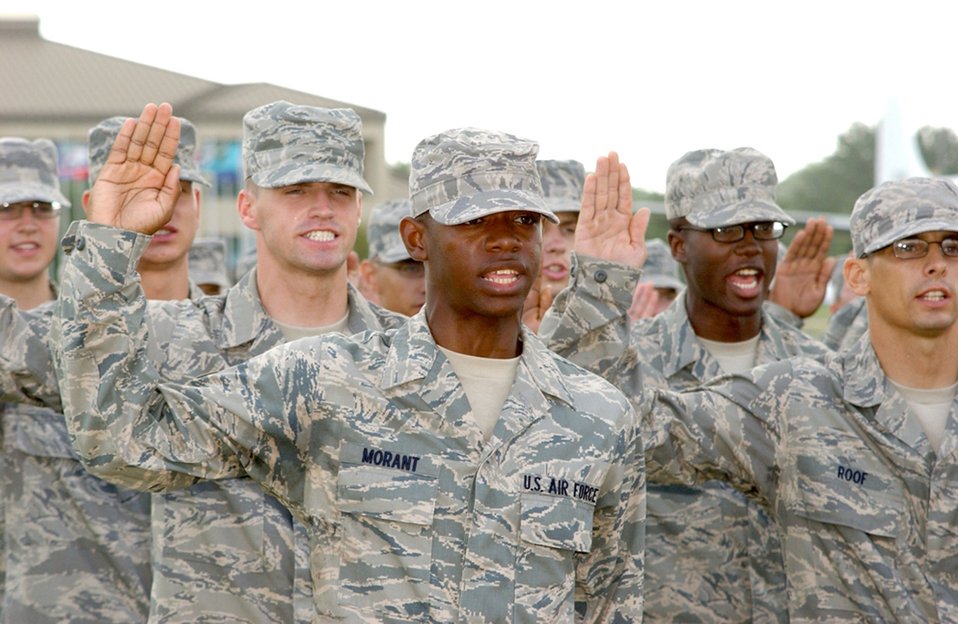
Armed Forces Integration Day

Basic trainees with the 326th Training Squadron stand in formation during a Basic Military Training graduation ceremony July 25 at Lackland Air Force Base, Texas.